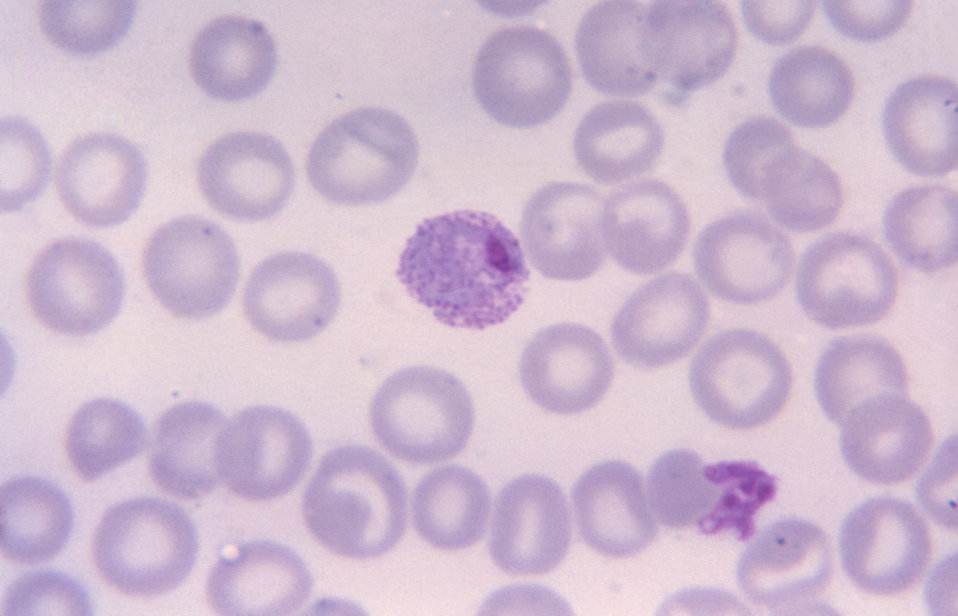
This thin film Giemsa stained micrograph depicts a mature Plasmodium vivax trophozoite.